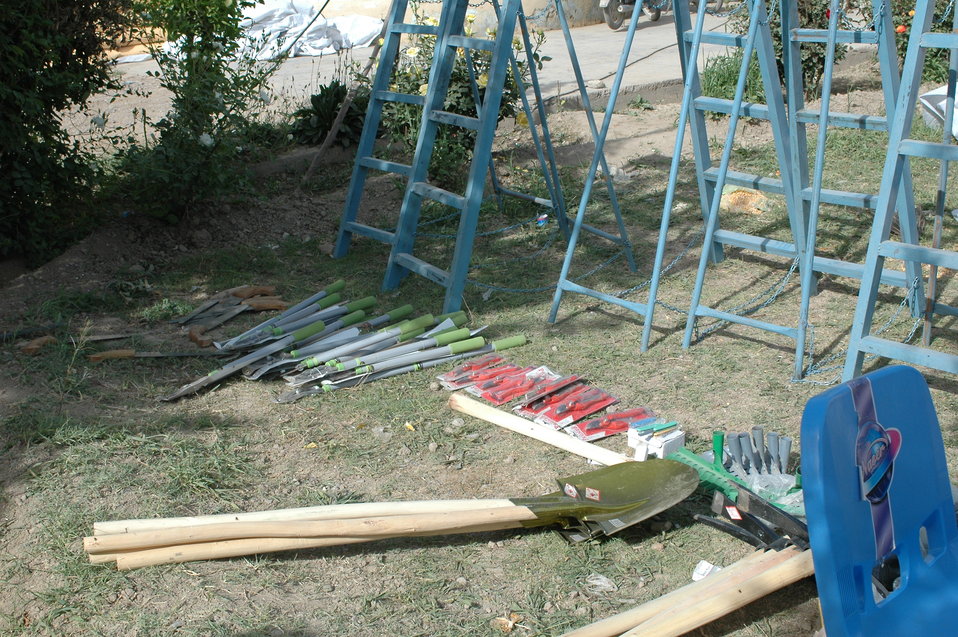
Dr Shah Visits Argandab April 10, 2010